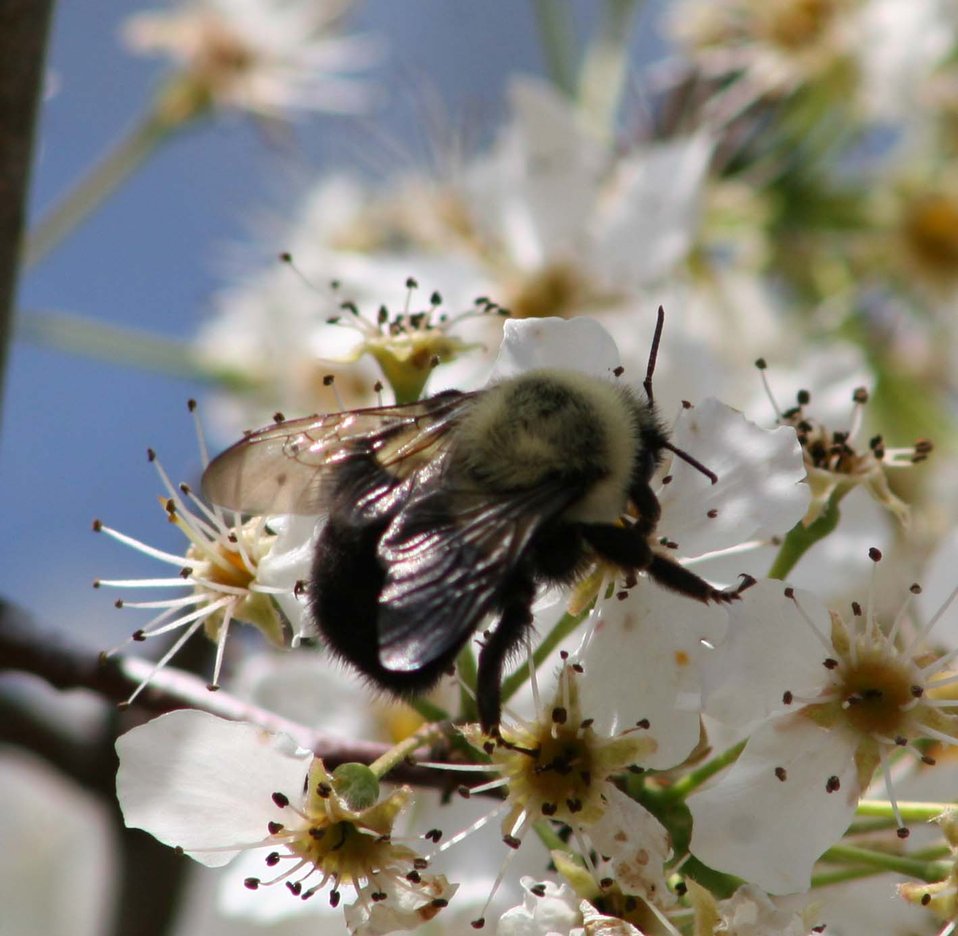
Uploaded by request of Allison Atkinson

This picture was taken on Easter day 2008. While I was outside my grandmothers house with my niece hunting eggs, I noticed the bees flying so I went 'bee chasing'. My niece is 7 years old and I just hope that when she gets my age the environment will be plentiful and SHE can go bee chasing if she wants too.